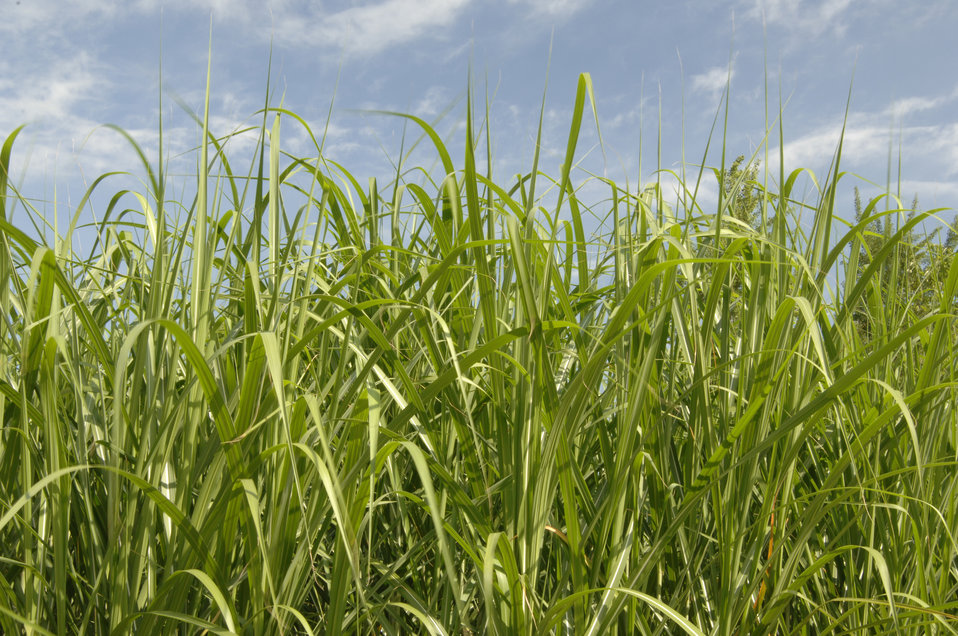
The Power Plant garden at the National Arboretum in Washington, D.C., displays a variety of plants that may provide a valuable and renewable source of bioenergy for America. Bioenergy is a renewable energy made available from materials derived from biological sources. Miscanthus is a grass native to subtropical and tropical areas of Africa and southern Asia and could be important in the production in cellulosic ethanol. It is a giant among grasses growing to a height of 14 feet and could produce twice as much biomass as switchgrass. It takes three years before miscanthus is mature enough for harvesting and its low mineral content actually improves fuel quality. This photograph shows Miscanthus growing in the Power Plant garden at the National Arboretum in Washington, D.C. on August 19, 2008.